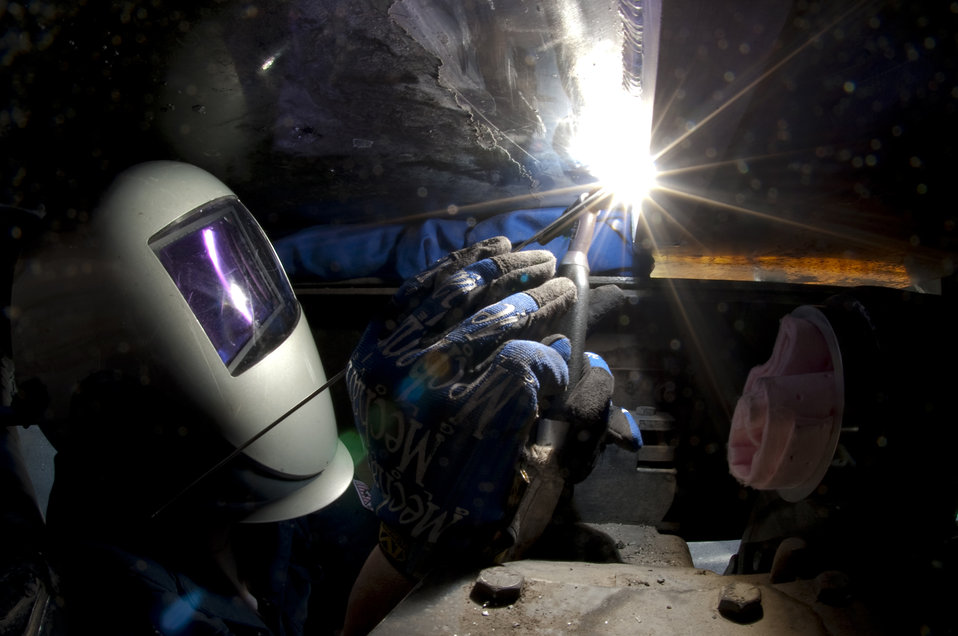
A bright moment

Tech. Sgt. Daniel Fraga, master welder for the 49th Maintenance Squadron, welds a crack on the undercarriage of a fuel truck Oct. 14, 2010, at Holloman Air Force Base, N.M. Sergeant Fraga used welding filler wire to add to the molten pool created by the welding process.